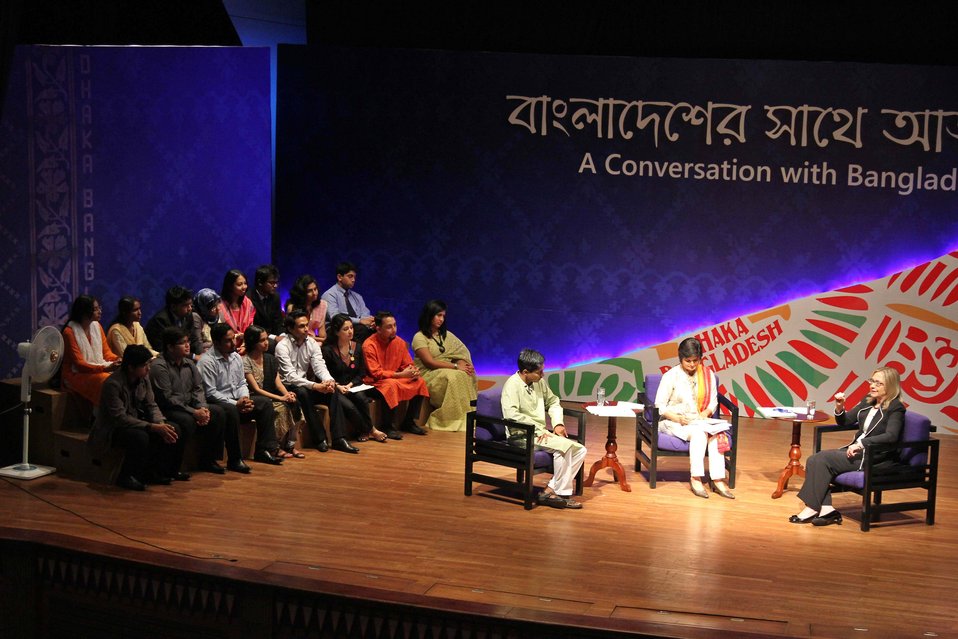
Secretary Clinton Participates in a Townterview With Bangladeshi Youth

U.S. Secretary of State Hillary Rodham Clinton participates in a townterview with Bangladeshi youth moderated by Ejaj Ahmad, Founder and President of Bangladesh Youth Leadership Center, and Munni Saha, Head of News at ATN News, in Dhaka, Bangladesh, on May 6, 2012. Also featured in the photo are members of the Ambassador's Youth Council.